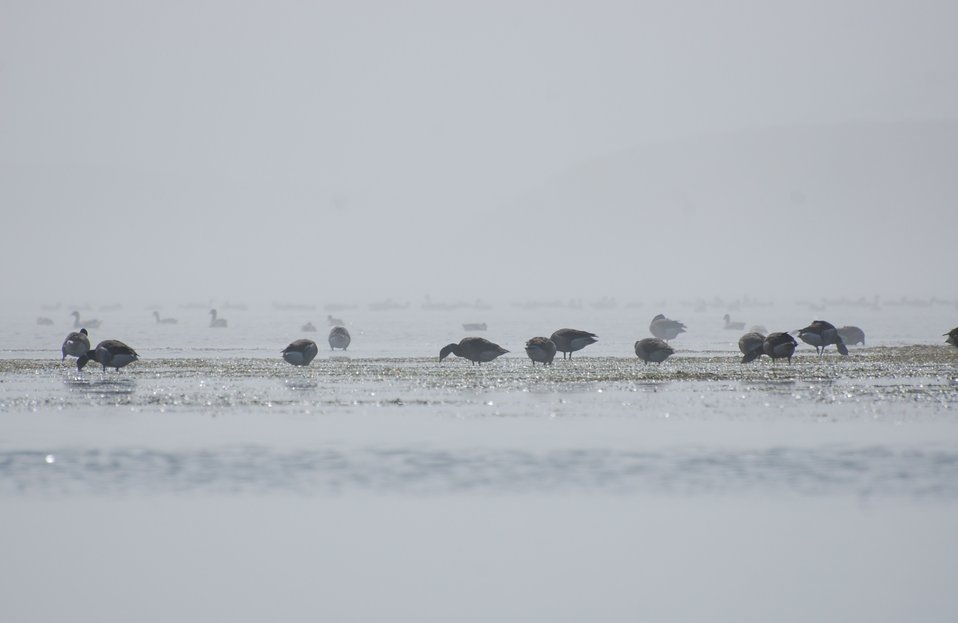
Brant in fog

Brant, Izembek Lagoon, Izembek National Wildlife Refuge